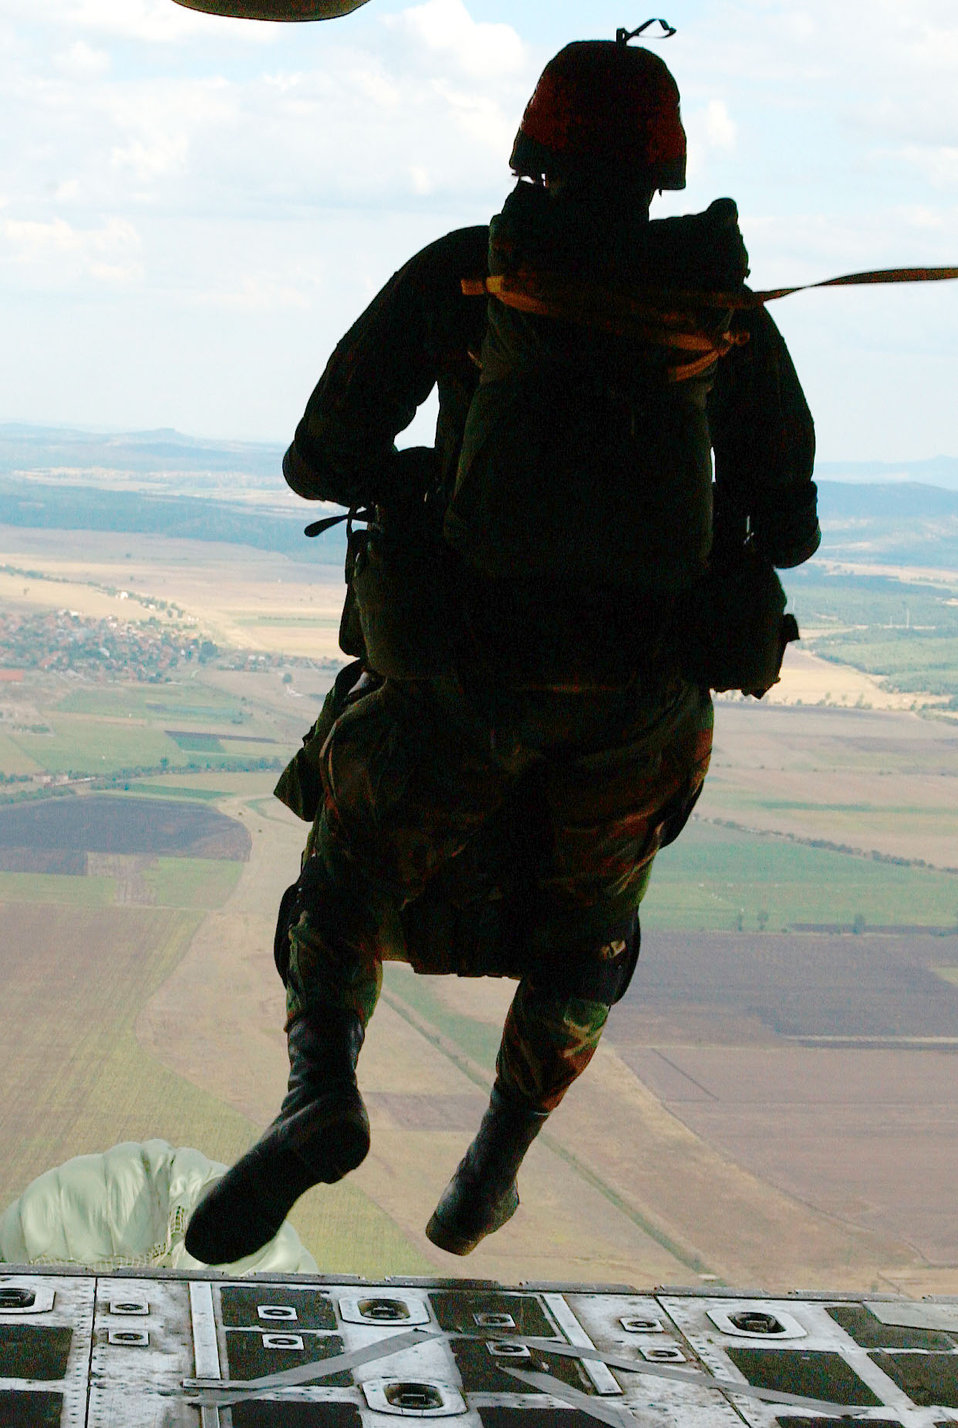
Into the wild blue yonder

OVER GERMANY -- A member of the 786th Security Forces Squadron, Sembach, Germany, jumps from a Romanian C-130 during Exercise Cooperative Key 2003. Cooperative Key is a multinational NATO exercise designed to enhance the interoperability of NATO and partner nation air forces through cooperation and familiarization of NATO procedures.